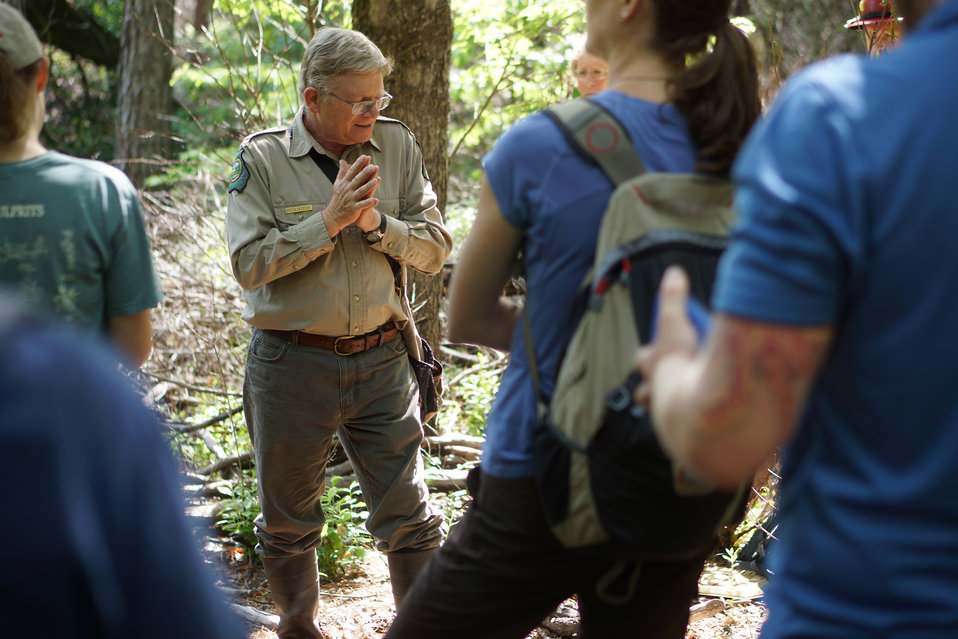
Tom Patrick provides some history on bog management in Georgia

In May, bog conservationists from Tennessee, North Carolina, and Georgia convened in the north Georgia mountains for the spring, 2014 meeting of the Bog Learning Network. The event provided an opportunity for biologists to see, first hand, the result of management efforts at two north Georgia bogs. More importantly, the outings provided an opportunity to share innovative approaches to bog management, such as the role of the Georgia Plant Conservation Alliance in conserving rare plants and coordinating a cadre of volunteers to work on bog management.

The Bog Learning Network was convened in the winter of 2013 as a way to bring together people working for bog conservation across the Southern Appalachians. Southern Appalachian bogs are one of North America’s rarest habitats and home to many rare plants and animals.